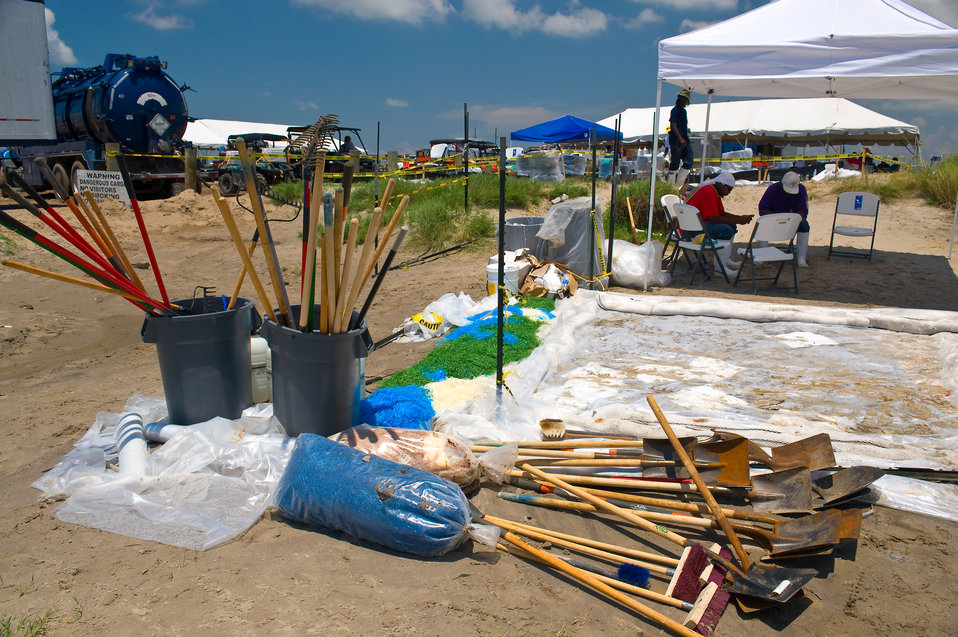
June 1, Cleanup staging area

Lafourche, La US EPA photo by Eric Vance